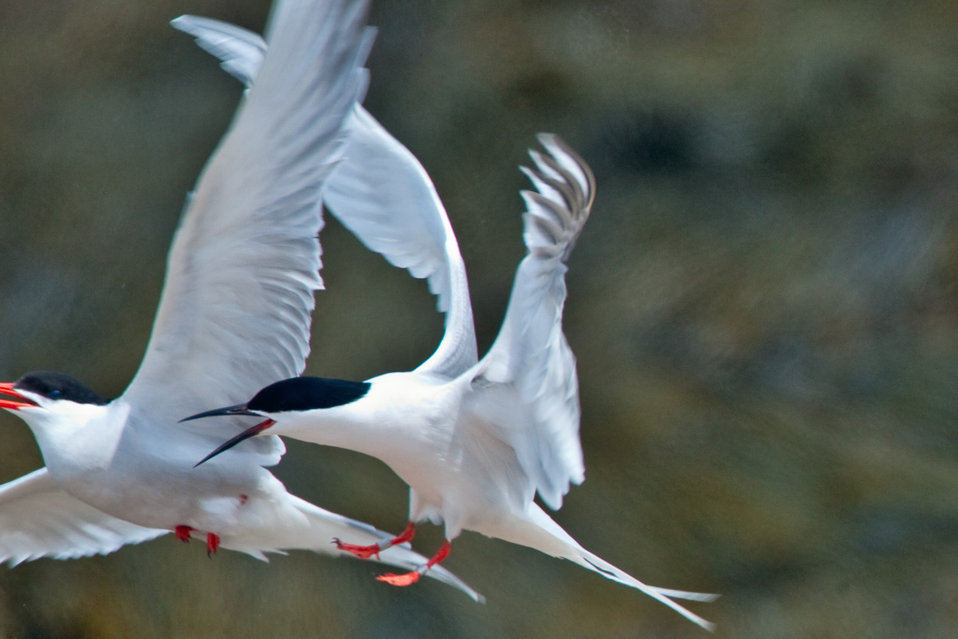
Roseate Tern Chasing a Common Tern

Petit Manan Island, Maine Coastal Islands NWR. Summer with the Seabirds blog: mainecoastalislands.wordpress.com/2010/08/01/terns/